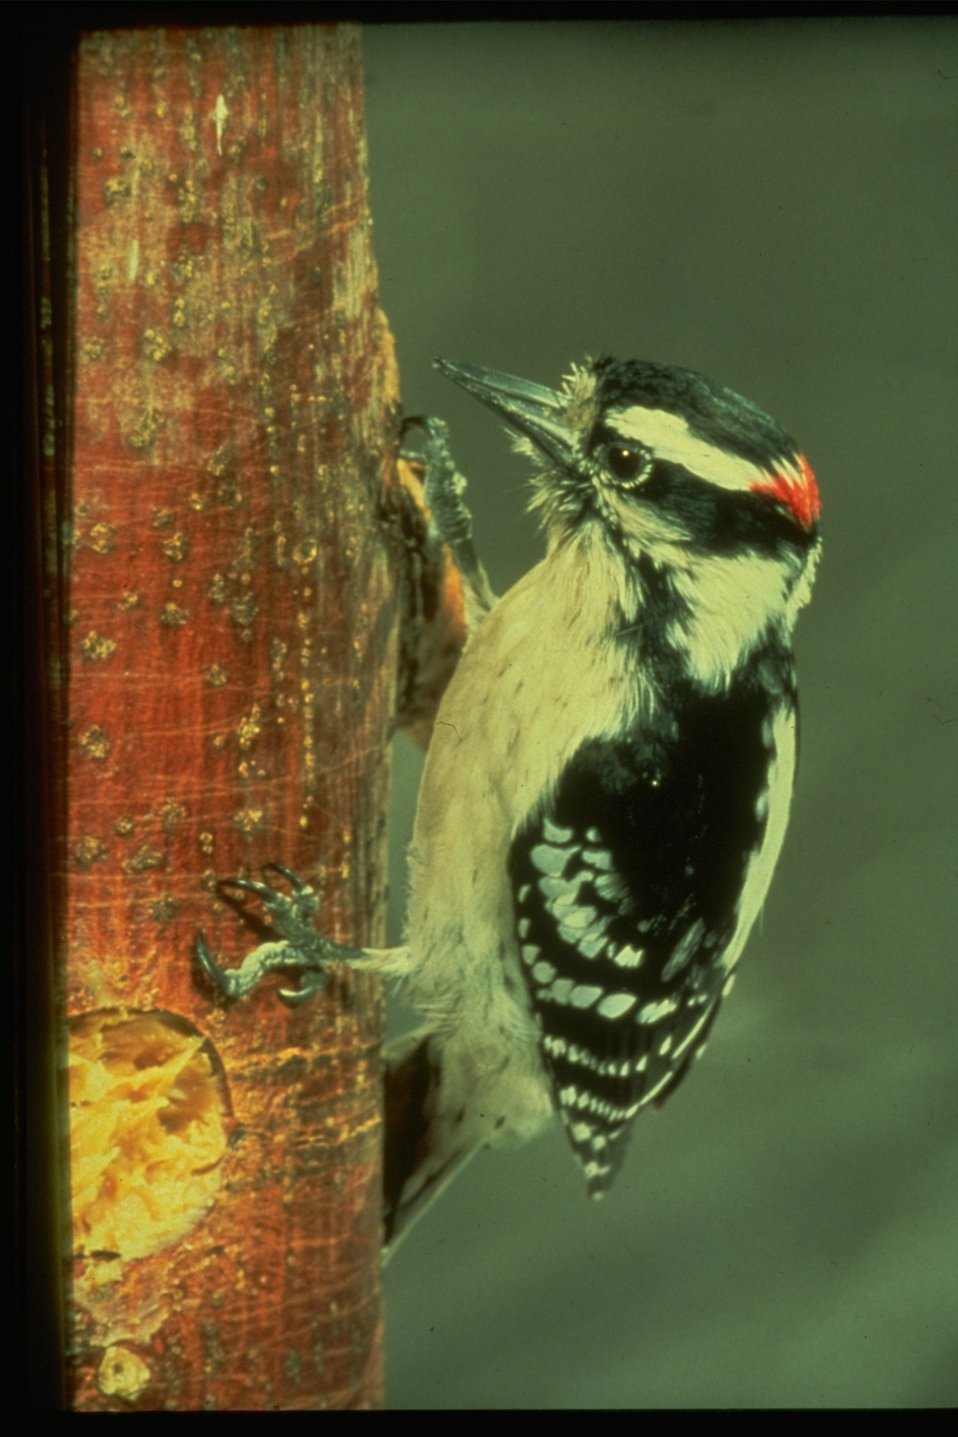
Hairy Woodpecker.